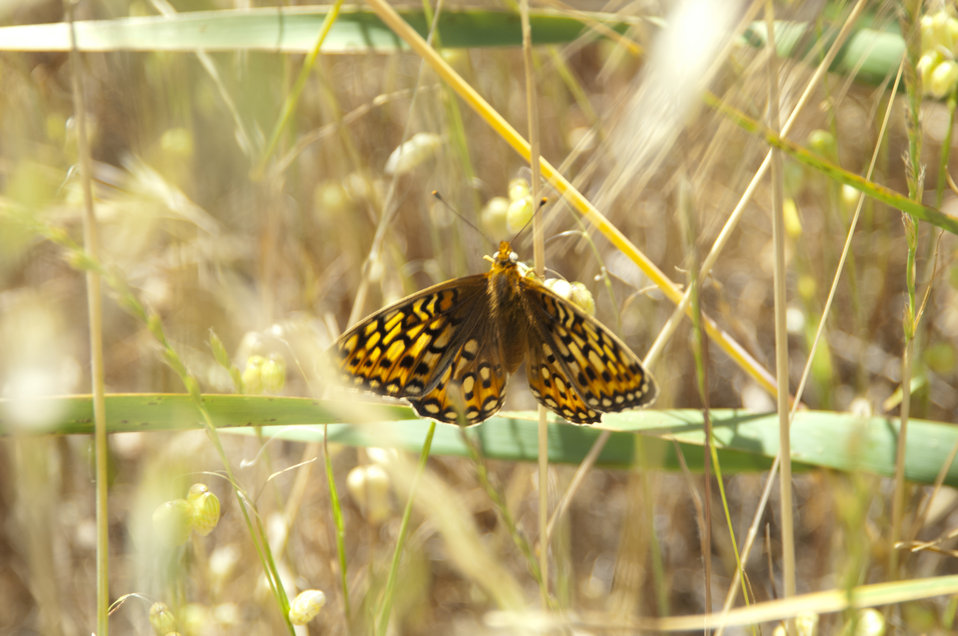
Callippe Silverspot Butterfly 2

Photo Credit: Sarah Swenty/USFWS

Seen recently on San Bruno Mountain, the endangered Callippe silverspot butterfly is found in the SF Bay Area of California.